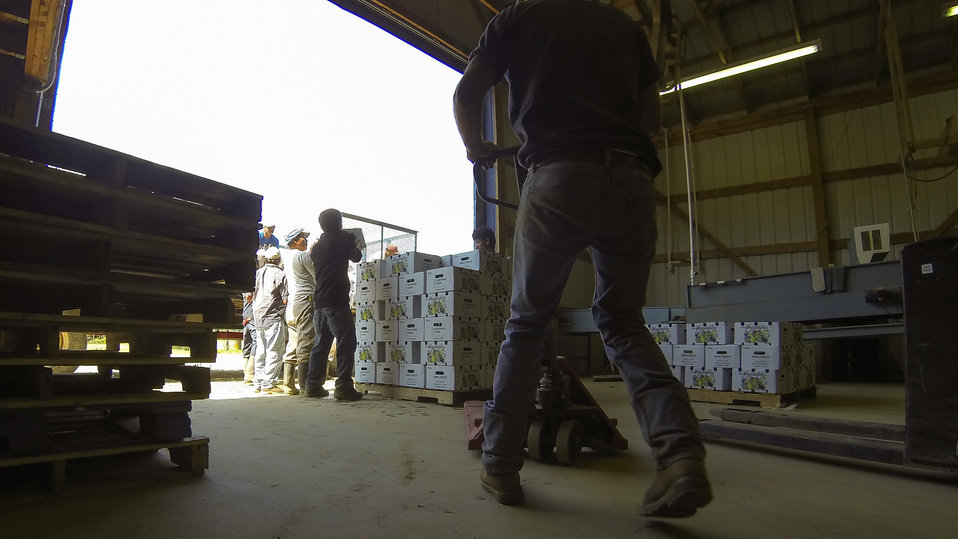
Fresh packed squash is transferred from processing trailer to pallets that will be loaded onto a waiting tractor-trailer rig for shipment at Kirby Farms in Mechanicsville, VA on Friday, Sept. 20, 2013. Kirby Farms devotes 200 acres of the farm to eggplant, spinach, beets, tomato, jalapeno peppers, melons and a variety of greens. Soybeans and small grain are grown on the remaining 300 acres. The fertile Virginia soil and their management practices, allows Kirby Farms to double and triple crop fields with rotational crop selection. Wholesalers, who buy from this farm, sell the produce to major supermarkets in the Mid-Atlantic region, from North Carolina to Maryland. Restaurants in the local area prepare and serve their harvest to patrons in the Greater Richmond, VA Region.